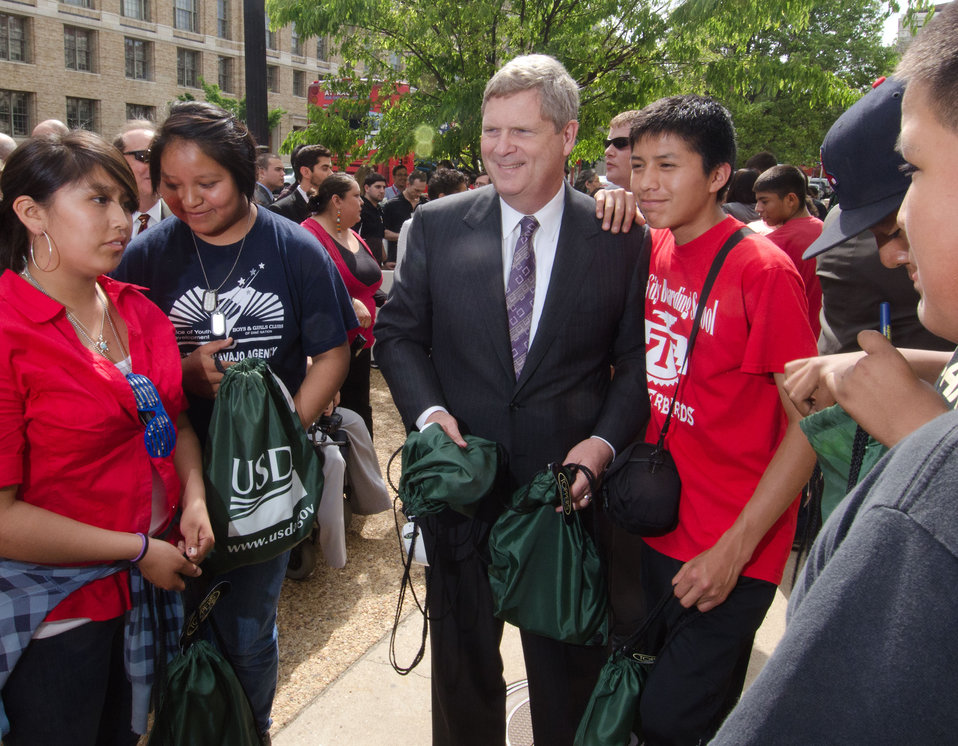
Agriculture Secretary Tom Vilsack met with Native American Youth at the U. S. Department of Agriculture in Washington, DC, on Wednesday, April 2, 2011 to encourage them to pursue a healthy lifestyle. After opening remarks and questions, Secretary Vilsack spent time with the 30 Students from Eastern and Western Tribes, Southeast Alaska, and Tuba City, Arizona, at he garden called The Roots of American Agriculture, and is part of the Headquarters’ People’s Garden.